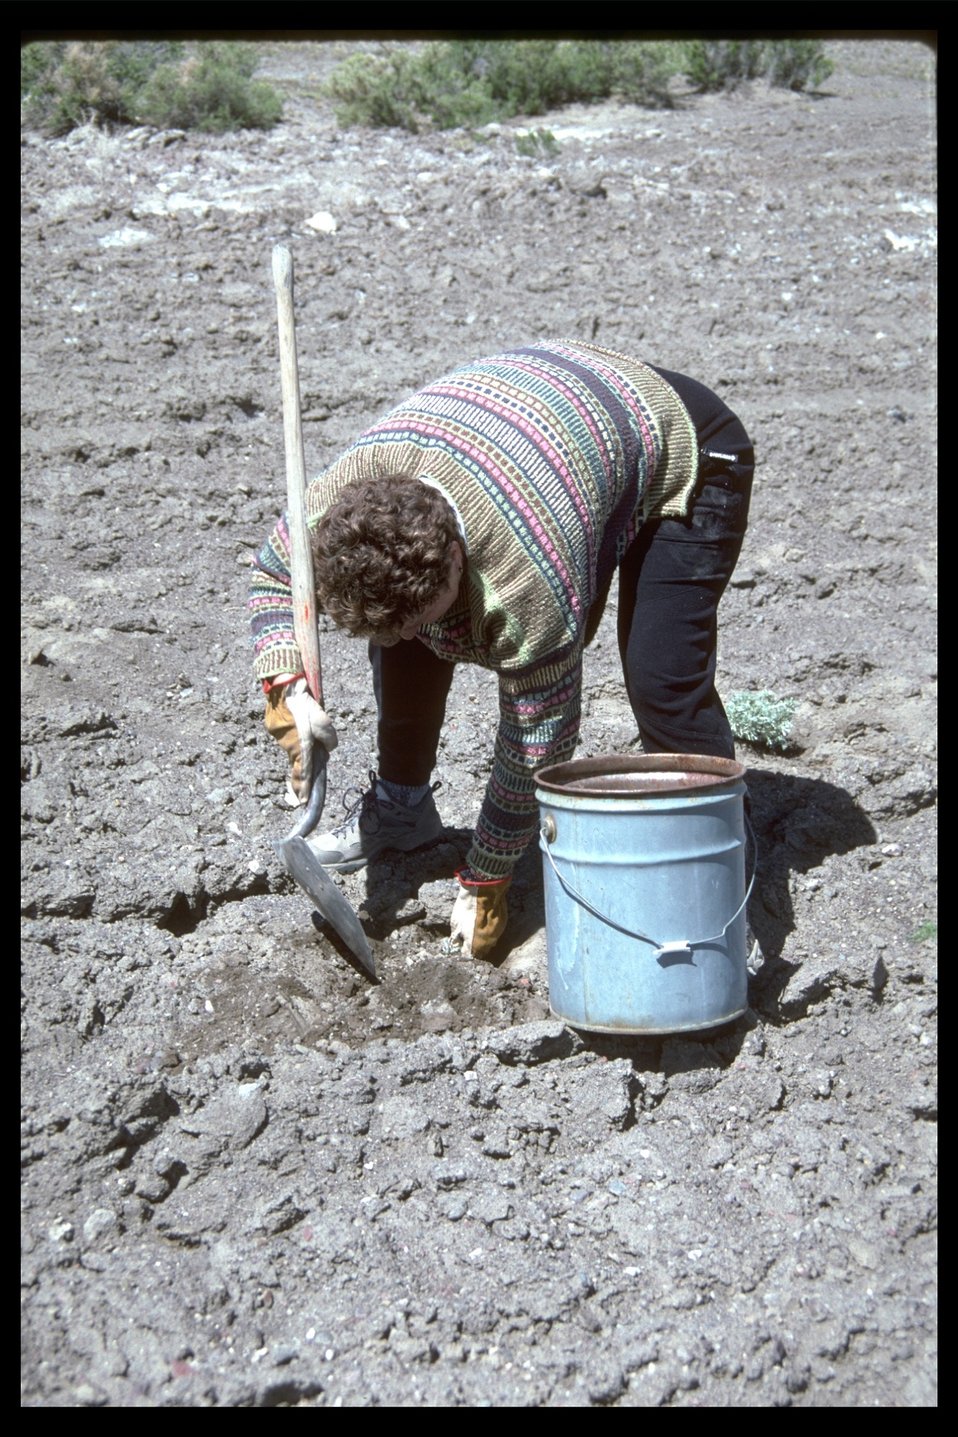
East Alvord WSA, volunteer plants native shrubs at Mickey Hot Springs. (WSA 2-73A)